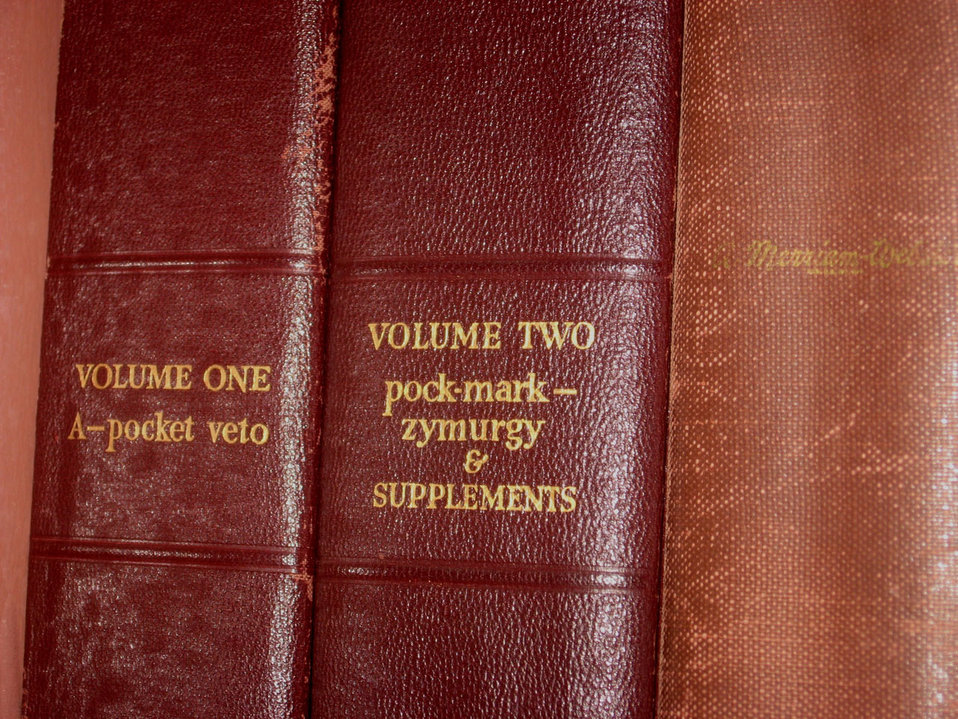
Old book borders

Dictionaries borders.